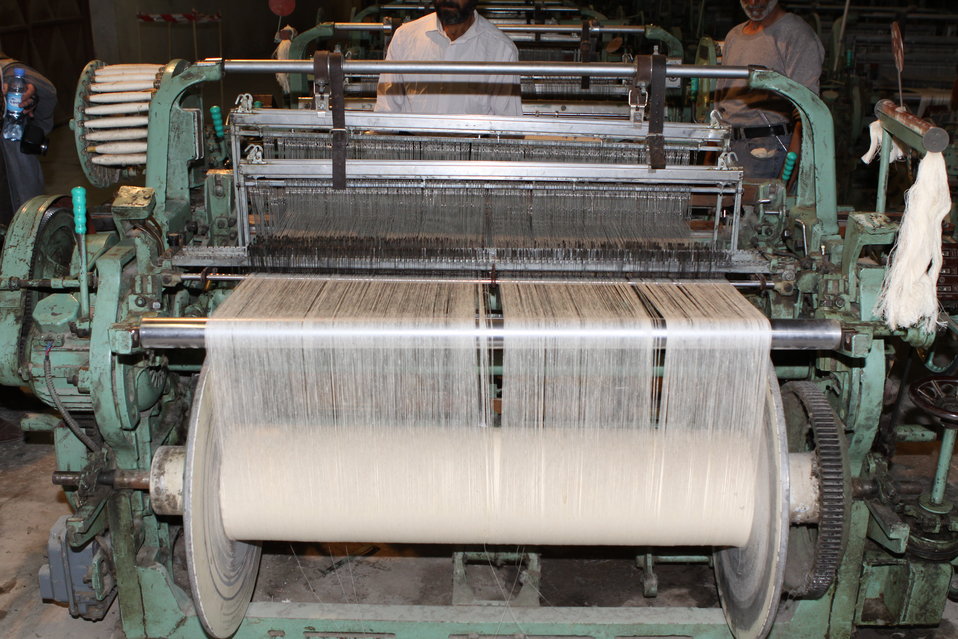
100525 Hirat Textile Company 746